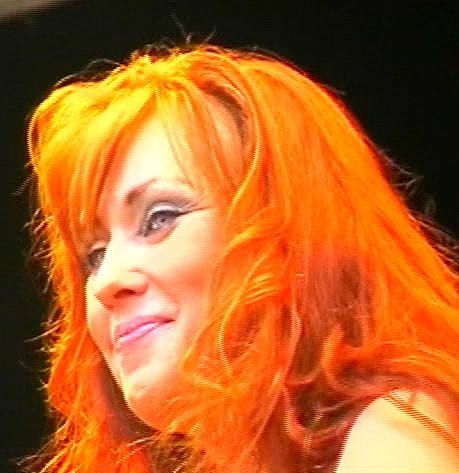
Saija Varjus at the 2005 Tangomarkkinat